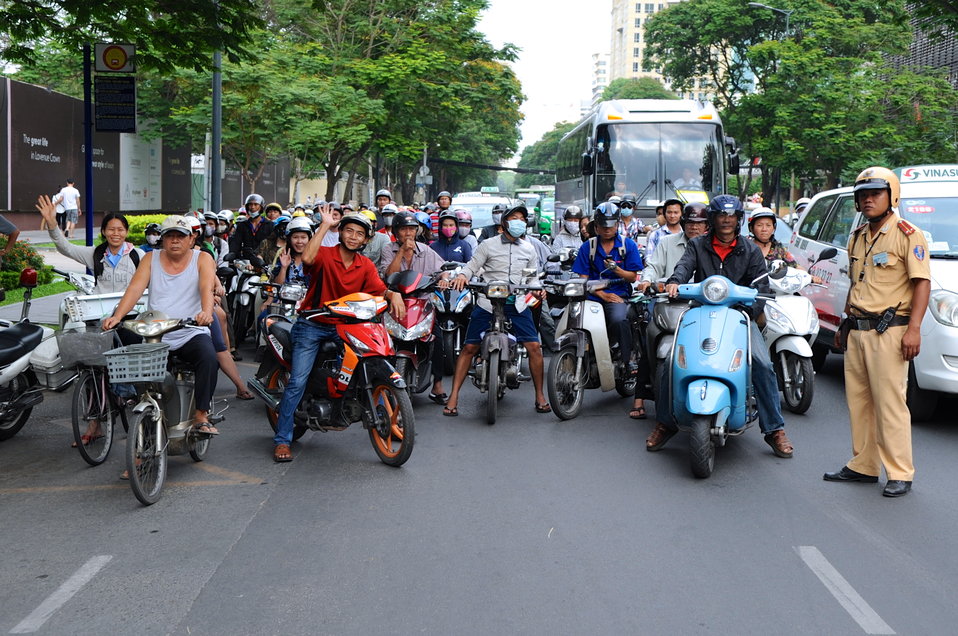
Vietnamese Motorbike Riders Pause as Secretary Kerry Crosses Street

Motorbike riders in downtown Ho Chi Minh City, Vietnam, pause as U.S. Secretary of State John Kerry crosses the street on December 14, 2013.